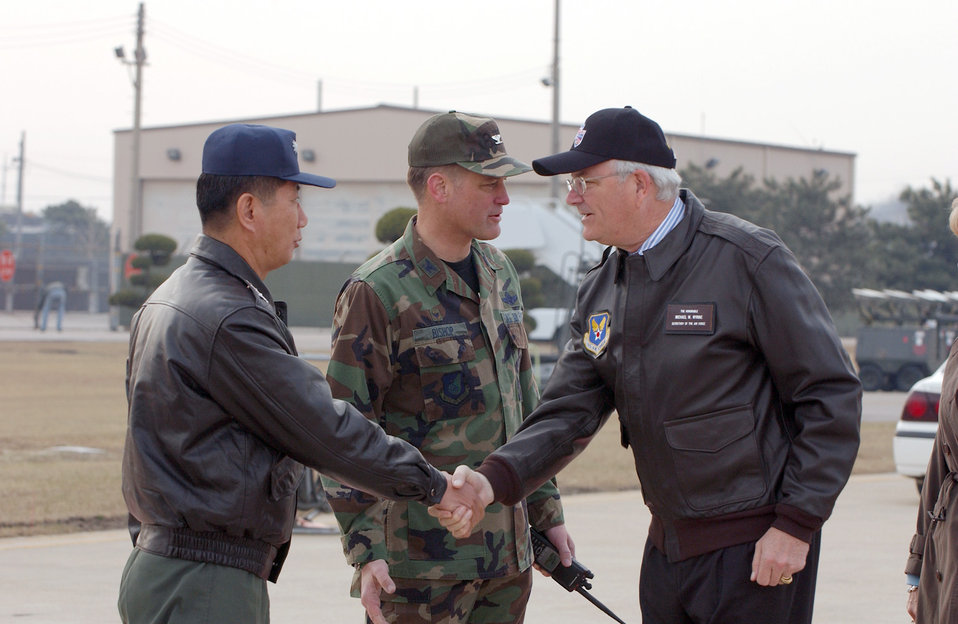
SECAF visits Kunsan

Secretary of the Air Force Michael W. Wynne (right) meets with Republic of Korea Air Force Col. Kim, Kwang Nam (left), 38th Fighter Group commander, together with Col. Brian Bishop (center), 8th Fighter Wing commander. Secretary Wynne visited Kunsan Air Base, South Korea, Wednesday, March 22, 2006.